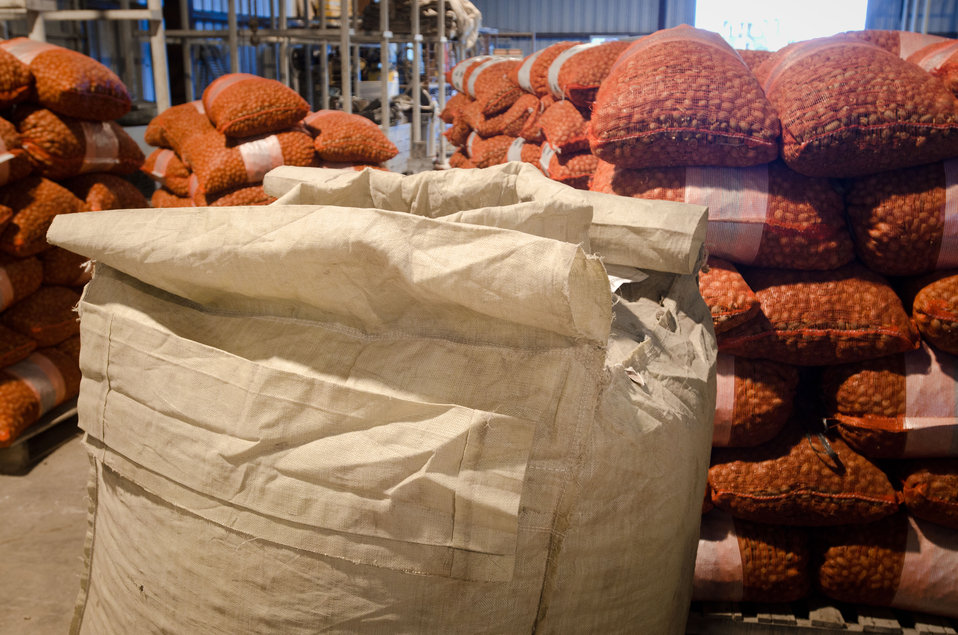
Pallets of 50 lb bags and one super sack with up to 1,500 lbs of pecans at Arrowhead Farms of Crystal City, TX, on Friday, December 9, 2011, owned by Mr. Akram Mohammad, a pecan farmer since 2005. The 719 acre farm with 10,000 trees, features some orchards with underground micro irrigation system that feeds water to the roots of 4,380 pecan trees on 146 acres. Mr. Mohammad said, “USDA (U.S. Department of Agriculture) was essential to my business and trees surviving the recent exceptional drought. The trees were stress free thanks to underground micro-irrigation. This is essential to the future growth of Texas agriculture and good for America.” U.S. Department of Agriculture’s (USDA) Environmental Quality Initiative Program (EQIP) awarded Mr. Mohammad a $130,000 grant in 2008. He provided $26,000 for the balance of the $156,000 total cost to install a 146-acre underground micro-irrigation for 4,380 trees.